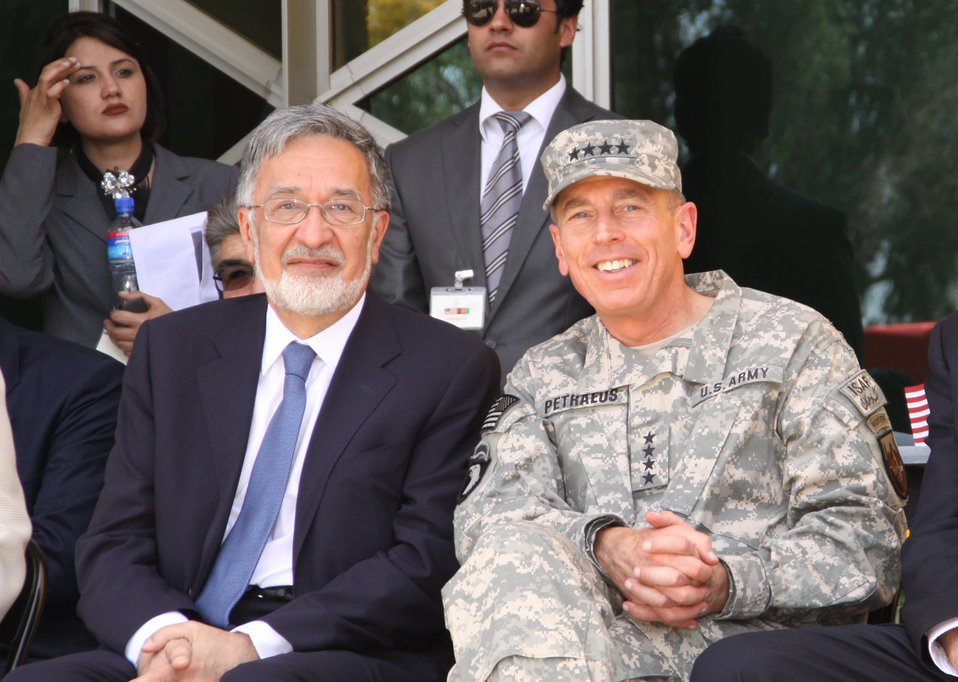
Kabul Official July 4th Celebration